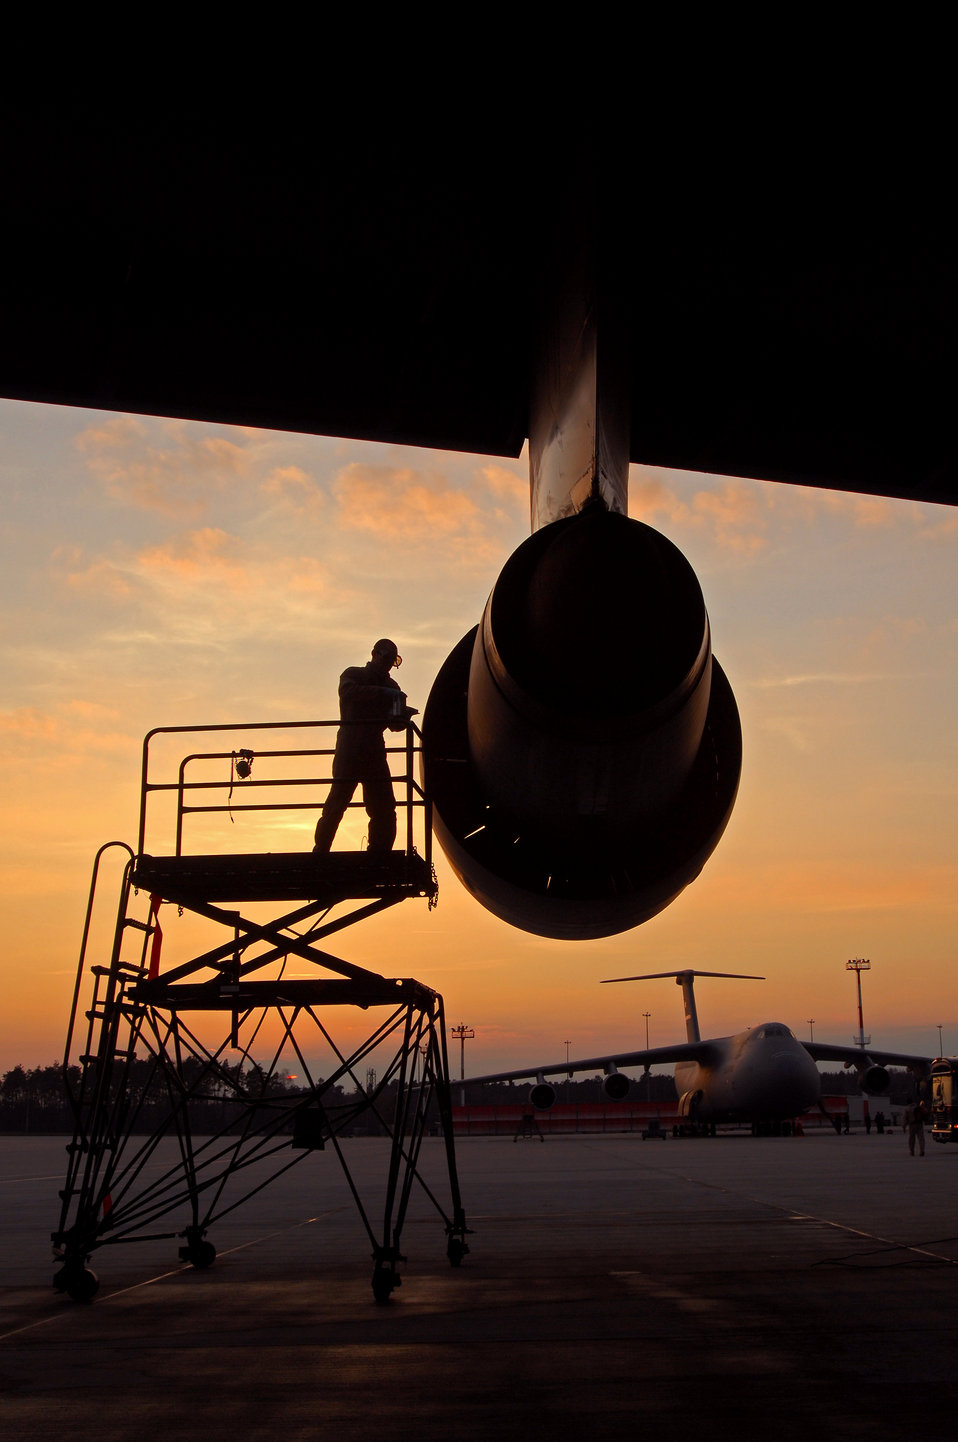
Keep 'em flying

A C-5 Galaxy crewmember performs an engine check March 3 at Ramstein Air Base, Germany, after the aircraft arrived from an air base in Southwest Asia.